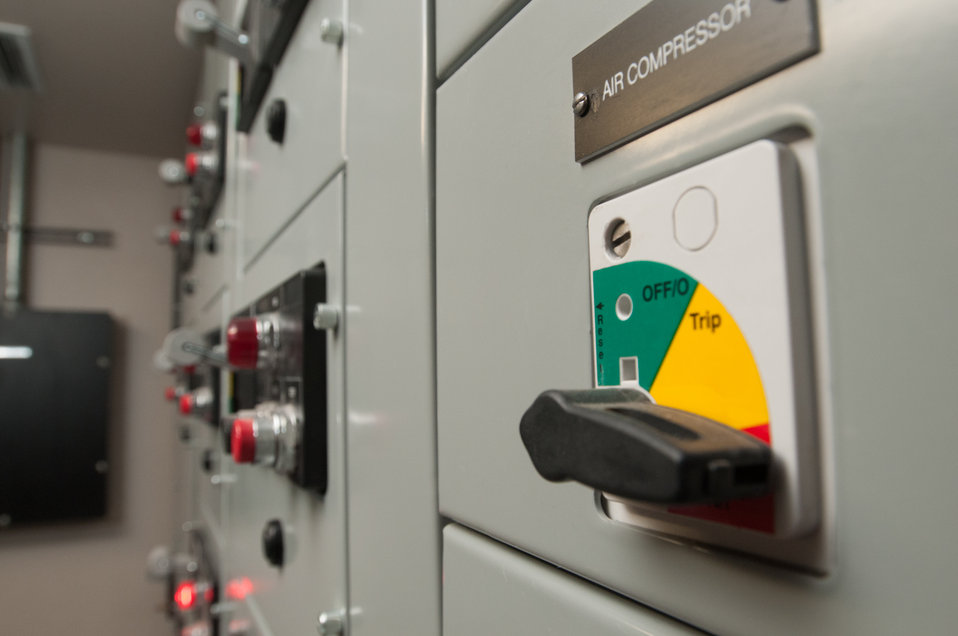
Freer Water Control and Improvement District (FWCID) benefits from the financial assistance of the U.S. Department of Agriculture (USDA) Rural Development (RD) to complete a two-phase approach to meeting the city’s water supply and safety needs, on Tuesday, June 18, 2013.

Although, the naturally occurring arsenic levels have remained constant for more than a century, the Environmental Protection Agency (EPA) safe level standards have established lower levels of arsenic to be safe for human consumption. To meet those levels FWCID approached USDA and was awarded a $986,000 loan for Phase I, to install two new water wells, each rated at 167 gallons per minute (creating a total of eight wells); 13,600 feet of well collection lines; and 15,000 linear feet of well control line to remotely control the well pumps and the 1,000,000 gallon holding tank at the well facility, which supplies water to the new Arsenic Removal System (Phase II). Previously, water was manually controlled by personnel who knew when and how long to manually opened and closed water valves or started well pumps to ensure holding tank levels were within operating levels during peek and slack times of the day. Phase II was a combination of a $1,832,000 loan and a $1,258,750 grant, which provided for the customized arsenic removal system, seen in these photos. The system includes a new 3,530 sp. ft. facility, on a .76-acre site, and houses the operations room, computer and power system, laboratory room, and pump systems. The entire operation can be monitored through a desktop computer interface system. The computer-controlled system ensures raw water is fed to the arsenic removal pump system, which works in sequence to maintain a constant pressure, when needed, to pump water through (blue) arsenic removal absorber vessels, and into ground storage tanks that feeds the residential and commercial needs of the city. Samples of water are periodically tested; and so far the arsenic levels have been below 1 part per billion (PPB), well under the 10 PPB limit.